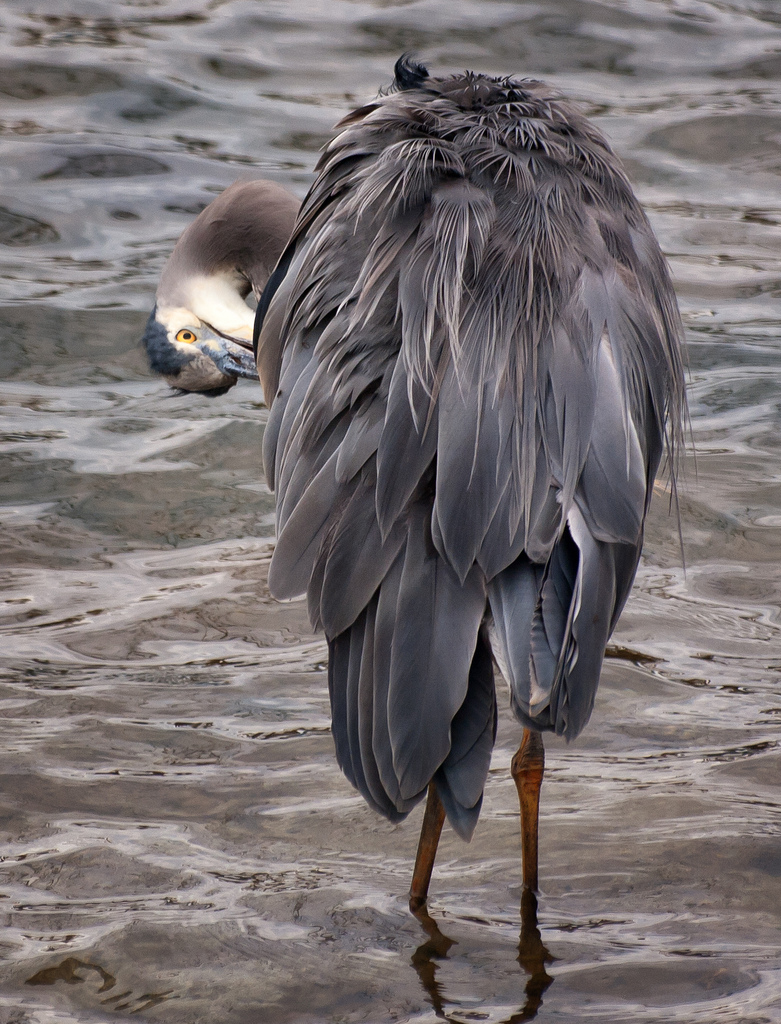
August

great blue heron
Nisqually National Wildlife Refuge, WA